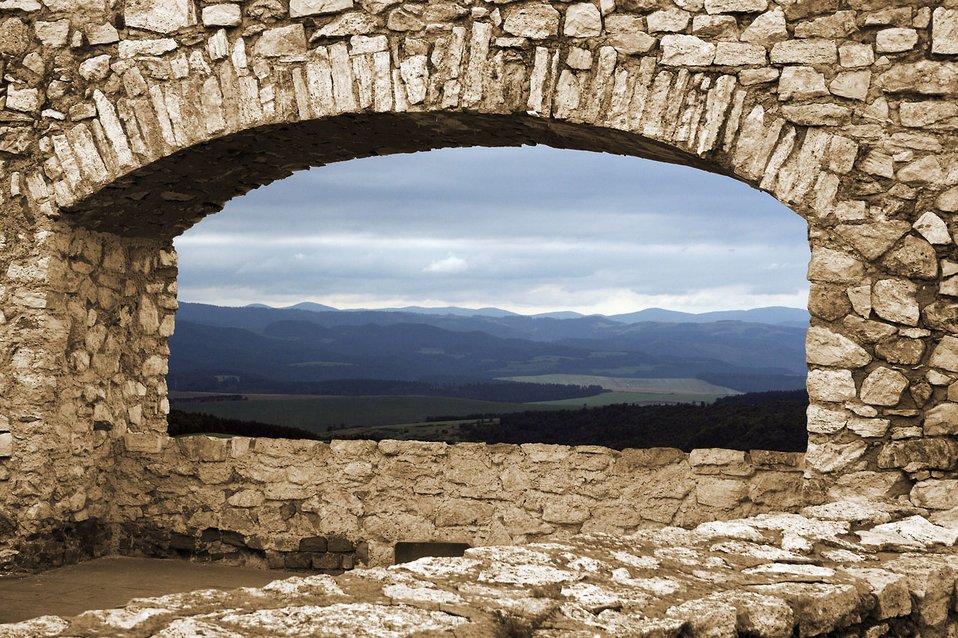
View from spis castle

The spis castle, the largest castle of central europe. view from its huge window.